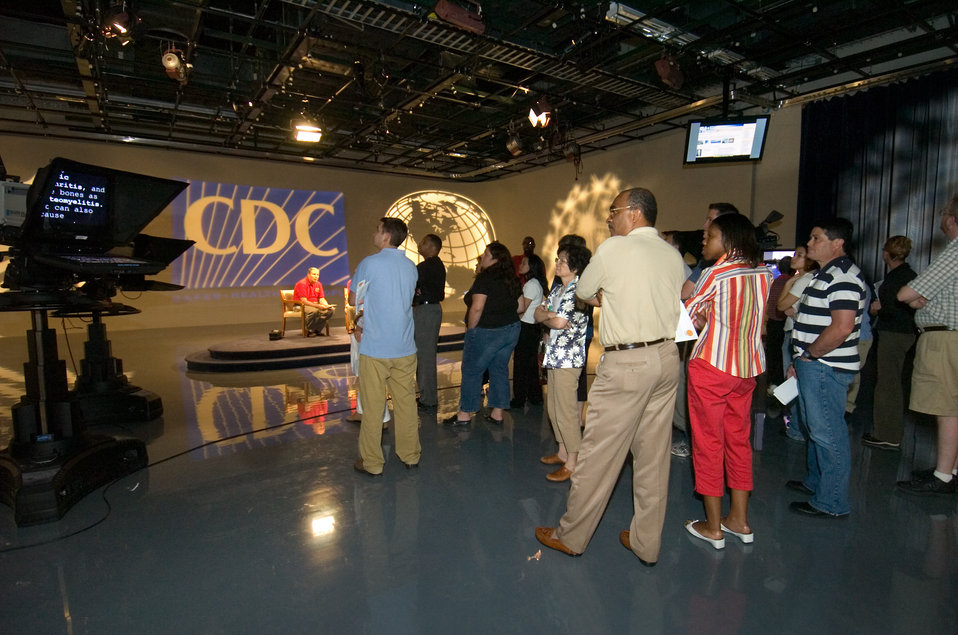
During 'Employee Preview Day' in September, 2005, these employees of the Centers for Disease Control and Prevention (CDC) were shown here visiting one of the two television studios located in the newly constructed Tom Harkin Global Communications Center, also known as Building 19.